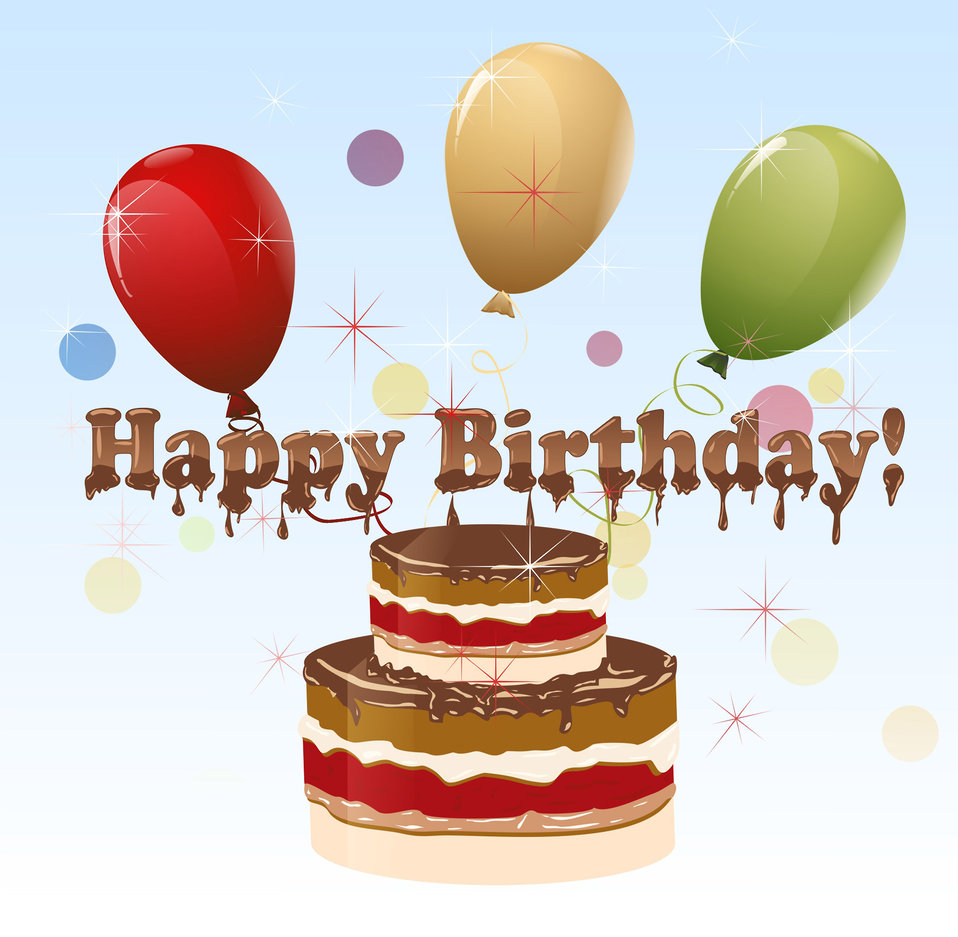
Happy birthday!

Vector card design greeting..